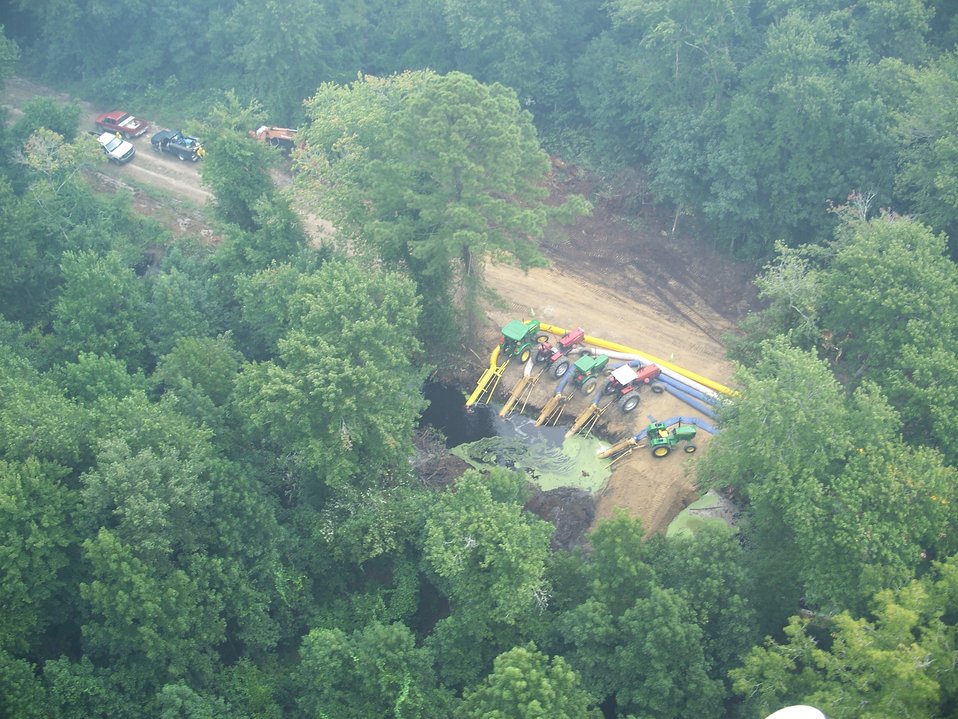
Thirsty pumps

Suffolk, VA, August 2011:. High volume pumps drafting water from a ditch on the eastern side of Lake Drummond on Great Dismal Swamp National Wildlife Refuge look like thirsty animals at a watering hole. The pumps, powered with the help of tractors, were to flood ditches to charge a water sprinkling system to douse the Laterl West Fire.